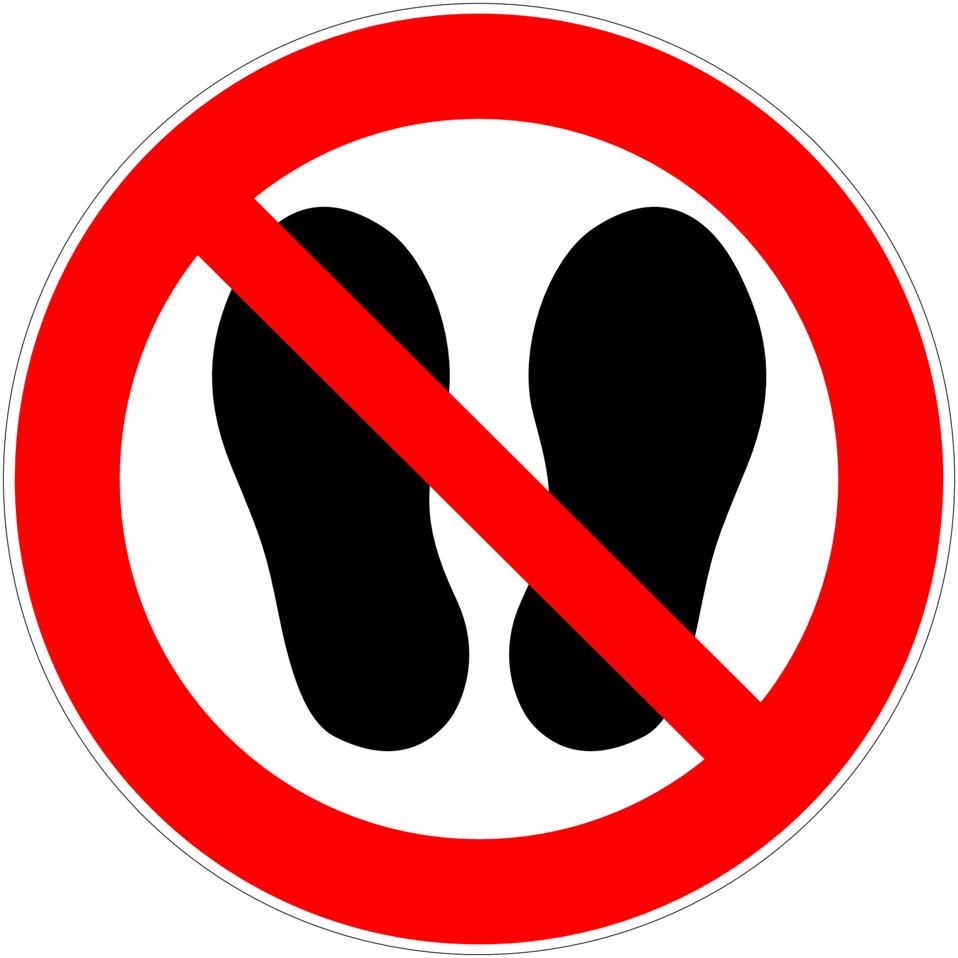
Deutsch: Betreten der Fläche verboten, Verbotszeichen D-P015 nach DIN 4844-2 Do not step in this area, prohibition sign D-P015 according to German standard DIN 4844-2